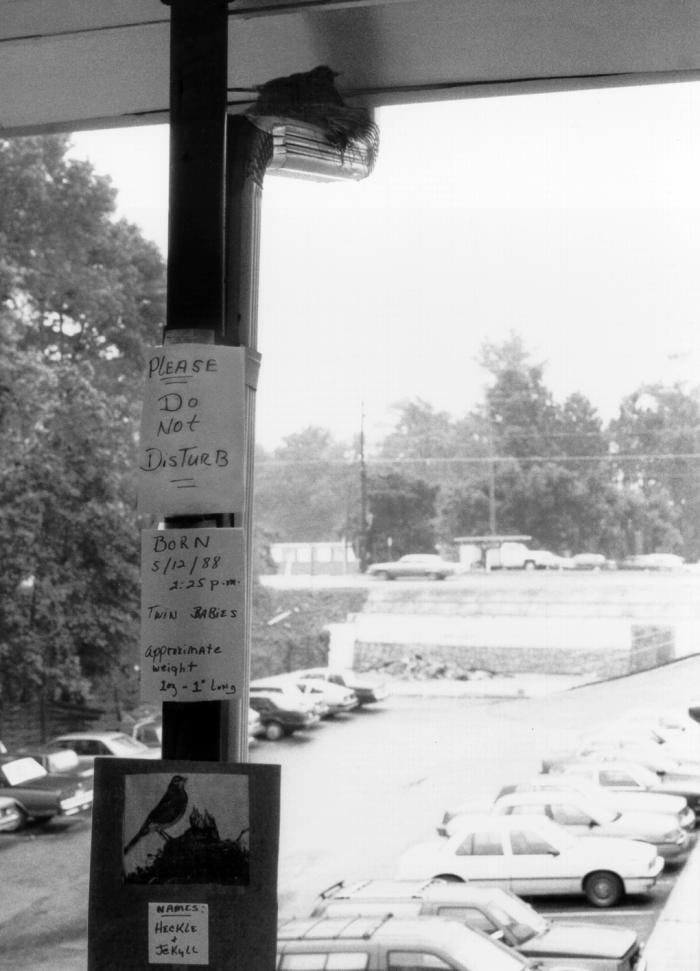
This May 1988 image revealed a robin's nest resting on a drain pipe outside a CDC facility.